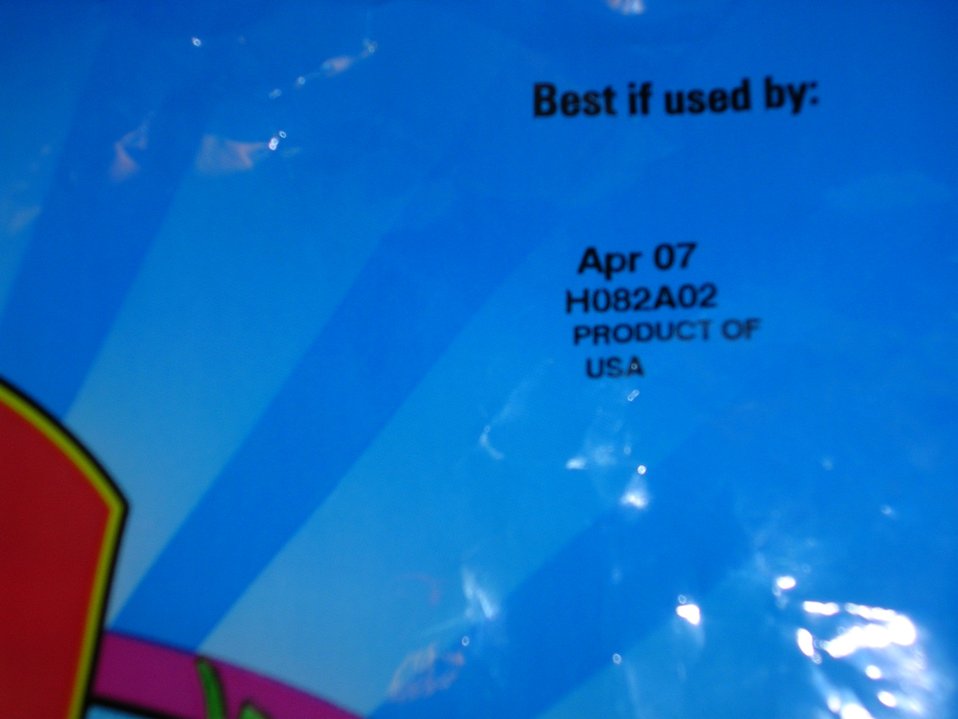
RECALLED - Fresh Express Spinach

April 5, 2011 - Product Recall - Fresh Express Spinach.